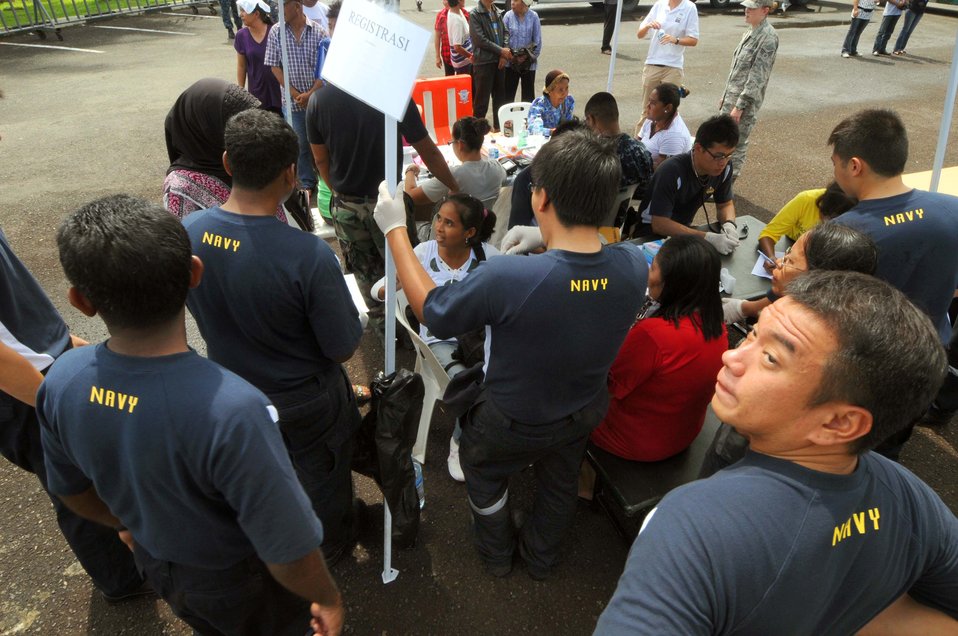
Medical professionals from the Japanese Navy ship RSS Endeavour prepare for visiting Indonesian patients during a medical civic action program in Abmon, Indonesia, on July 27, 2010. The Military Sealift Command hospital ship USNS Mercy (T-AH 19) is in Ambon participating in Sail Banda 2010, a series of events hosted by the Government of Indonesia to promote the future of small islands. Mercy’s participation features medical and dental care clinics and construction projects in and around Ambon, as well as on Seram Island.